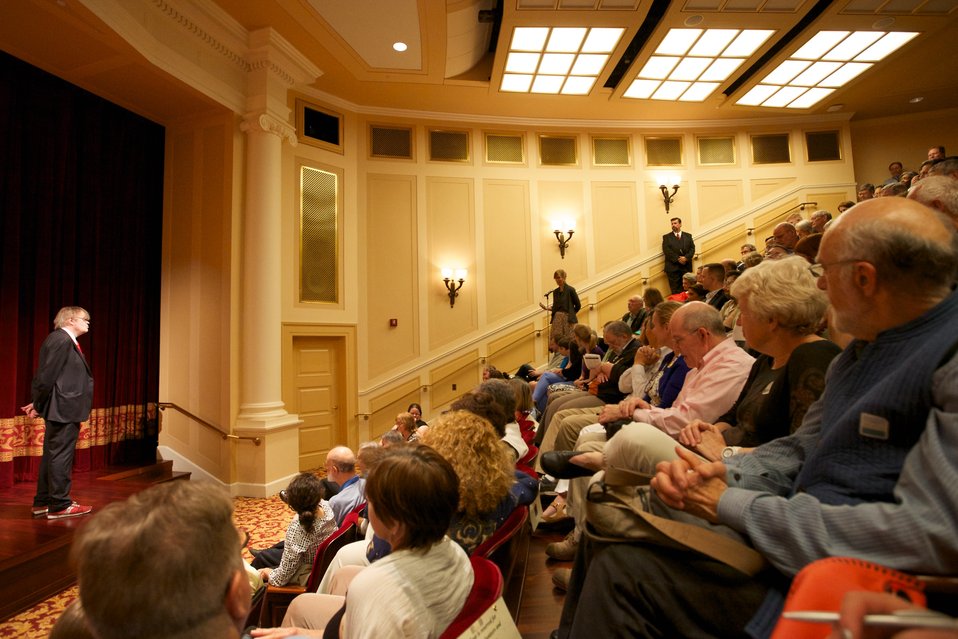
The Keillor Reader